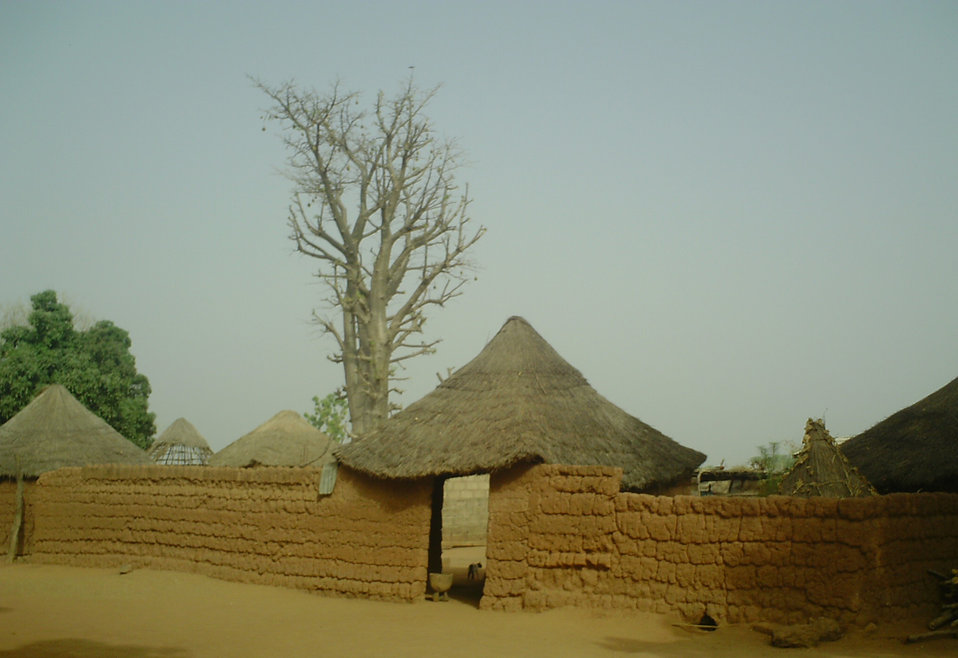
Communities in northern Cameroon surrounding Bouba Ndjida National Park.